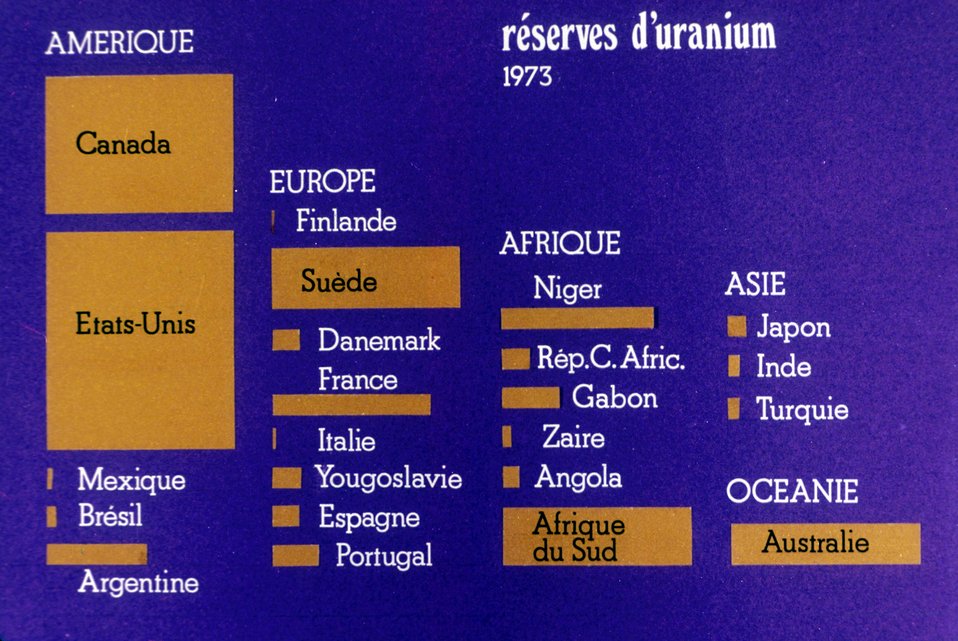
Les rÐserves d'uranium dans le monde.